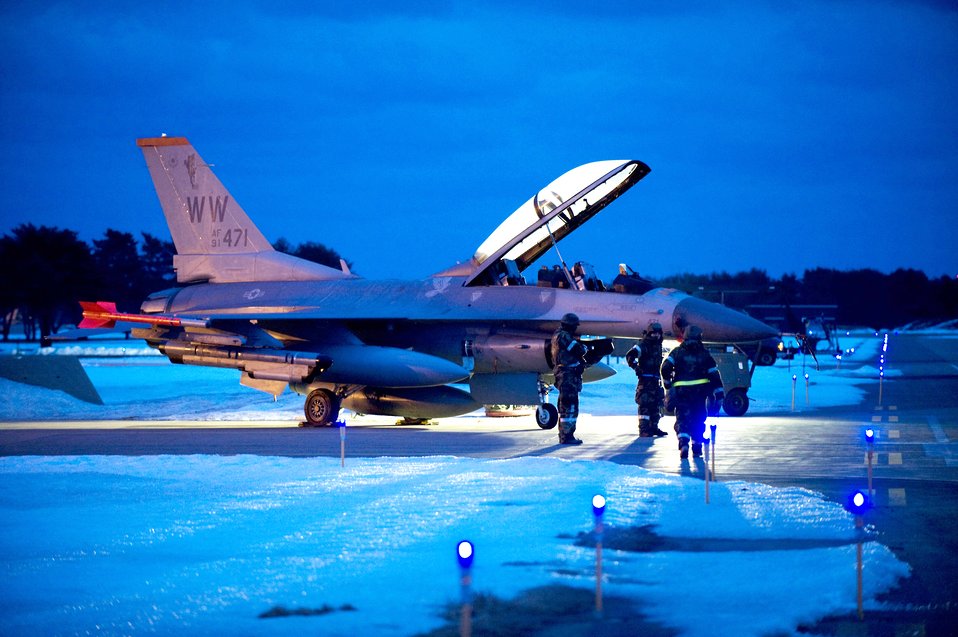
Misawa operations after dark

Maintenance crews ready an F-16 Fighting Falcon on the flightline at Misawa Air Base, Japan, for flight during an operational readiness exercise Feb. 1, 2010. After sundown, floodlights enable crews to keep working and continue operations into the night.